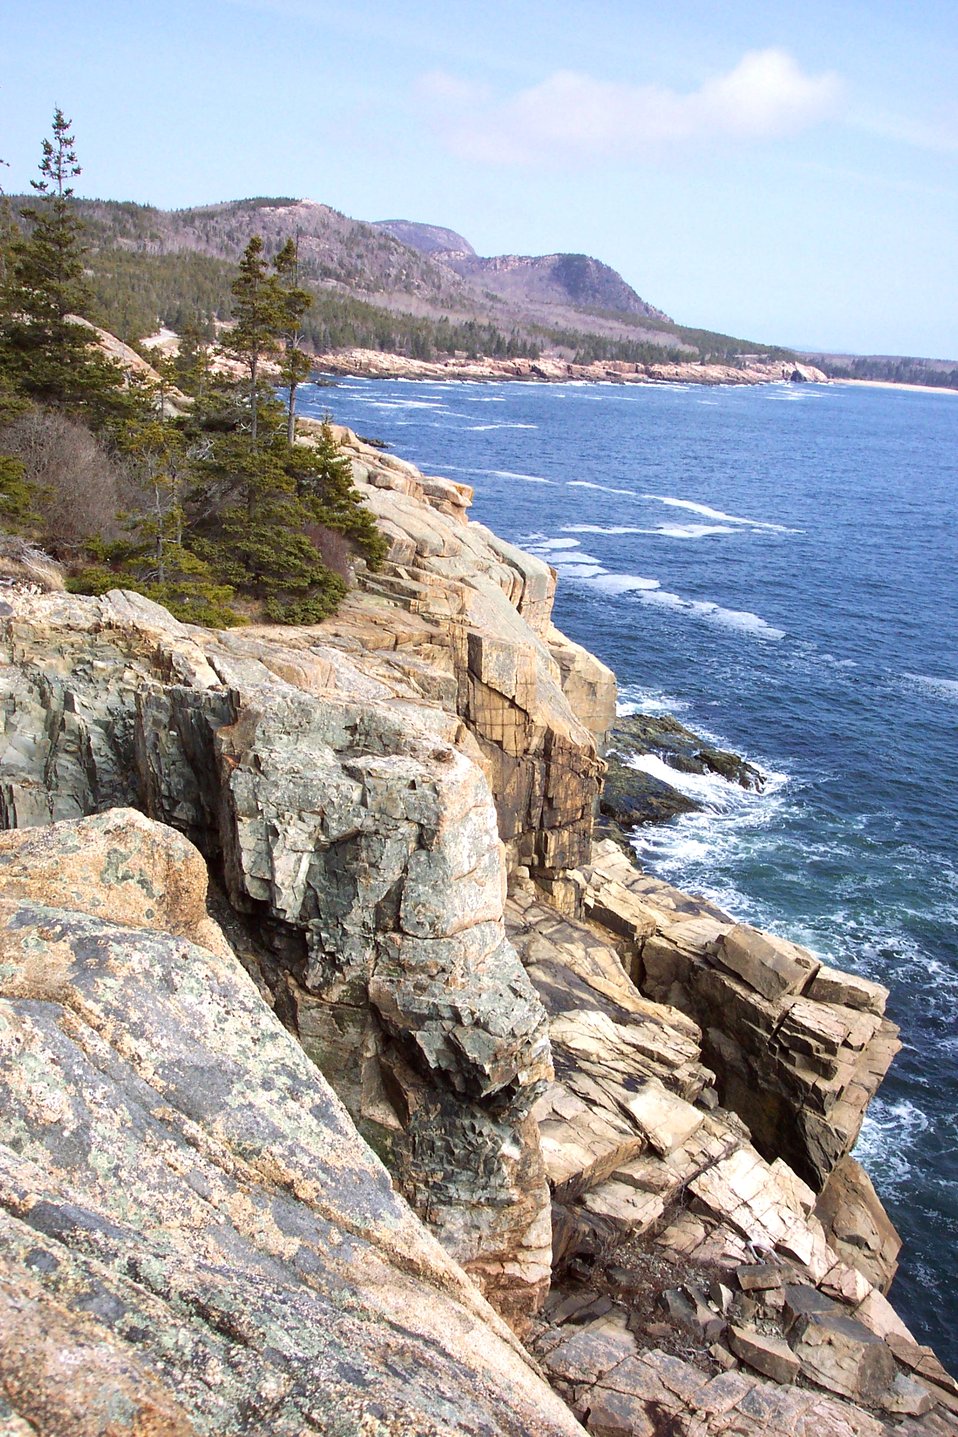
Looking north to the Sand Beach area from the Otter Cliffs.